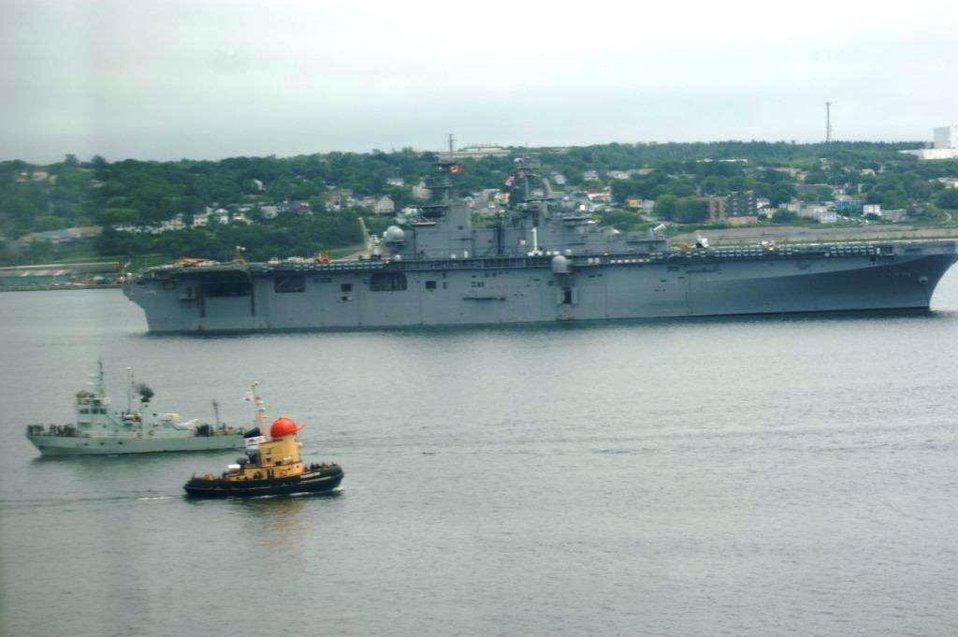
Ambassador Jacobson and His Wife, Julie, Celebrate the Fourth of July With 1,000 People Aboard the USS Wasp

U.S. Ambassador to Canada David Jacobson and his wife, Julie Jacobson, celebrate the Fourth of July four days early with 1,000 people aboard the USS Wasp in Halifax, Nova Scotia, Canada, on June 30, 2010. The Tug Boat Theodore Too is located in the foreground of the photo.